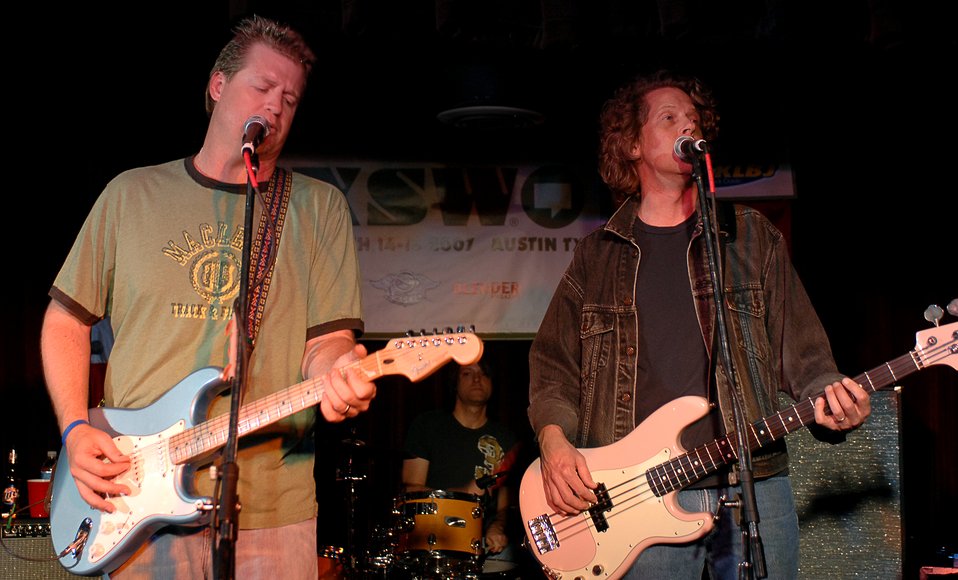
Country artist Robison eager to entertain in Iraq, Kuwait

Country music artist Charlie Robison and his band play for a packed house during a concert at the South by Southwest concert series March 16 in Austin, Texas. Mr. Robison will be entertaining deployed servicemembers in Iraq and Kuwait, until March 27, as part of an Armed Forces Entertainment show.